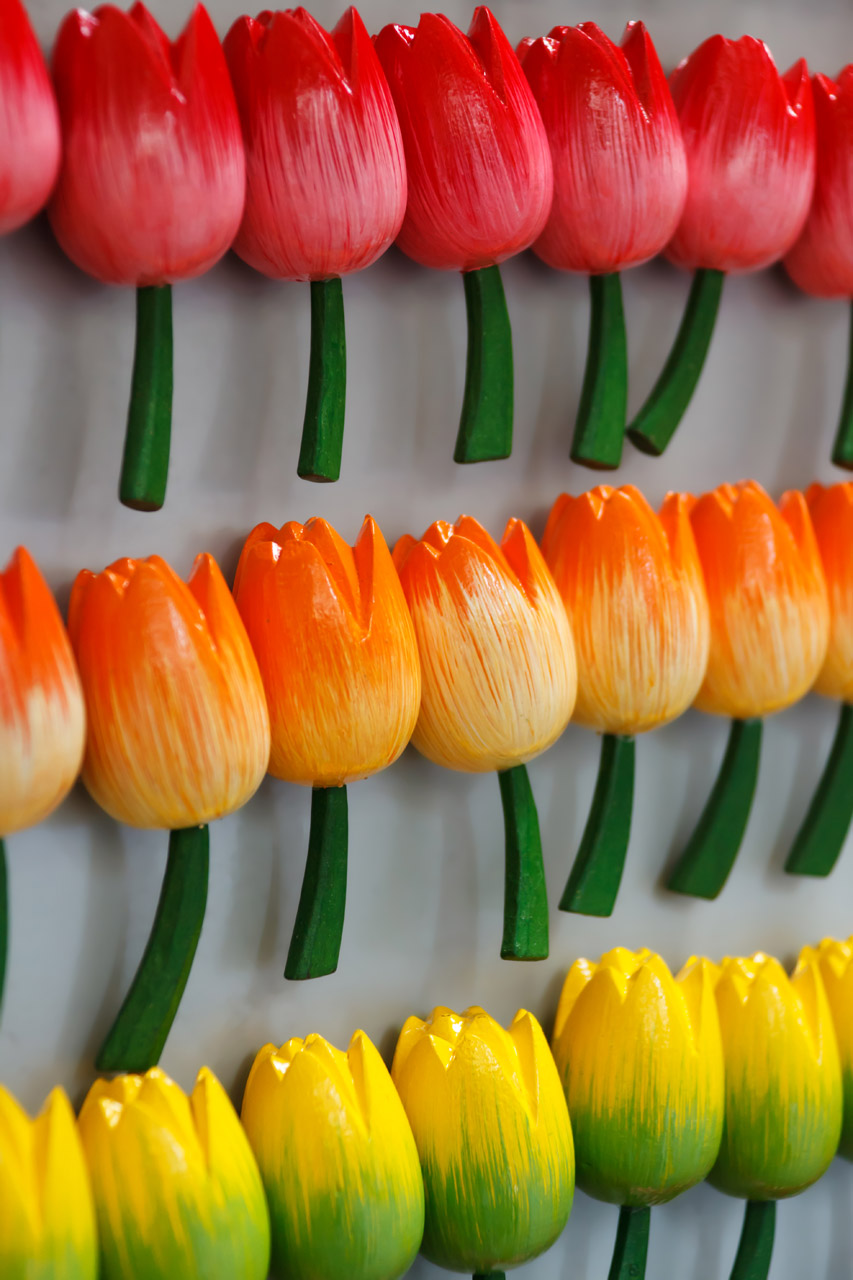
Flower magnets

Magnets in shapes of tulips on the board.